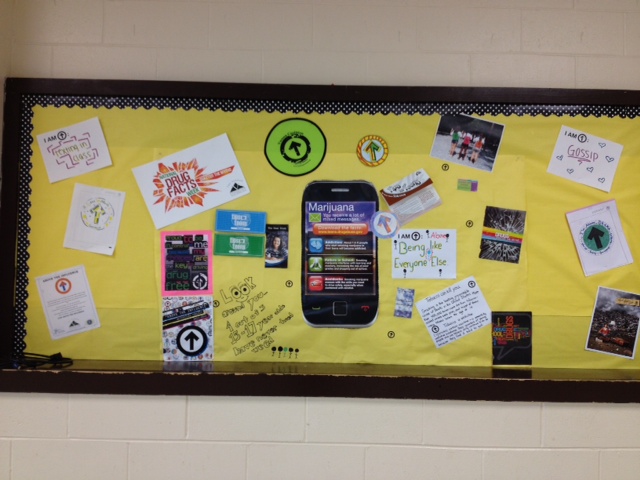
NDFW Artwork from NJ

Teens from Vernon Coalition in Newton, NJ show off their artwork for National Drug Fact Week 2014.